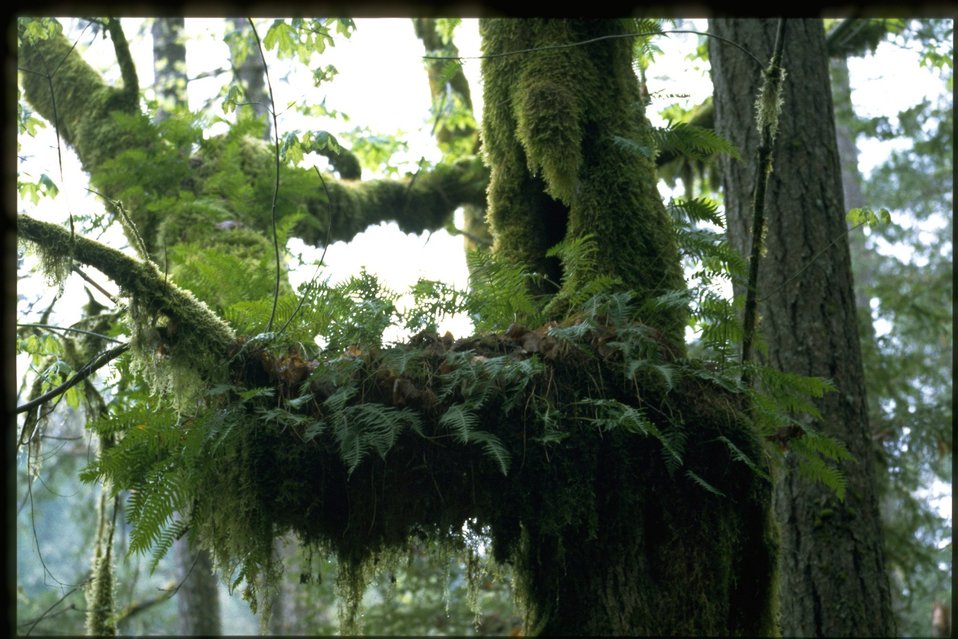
Polypodium glycyrrhiza.